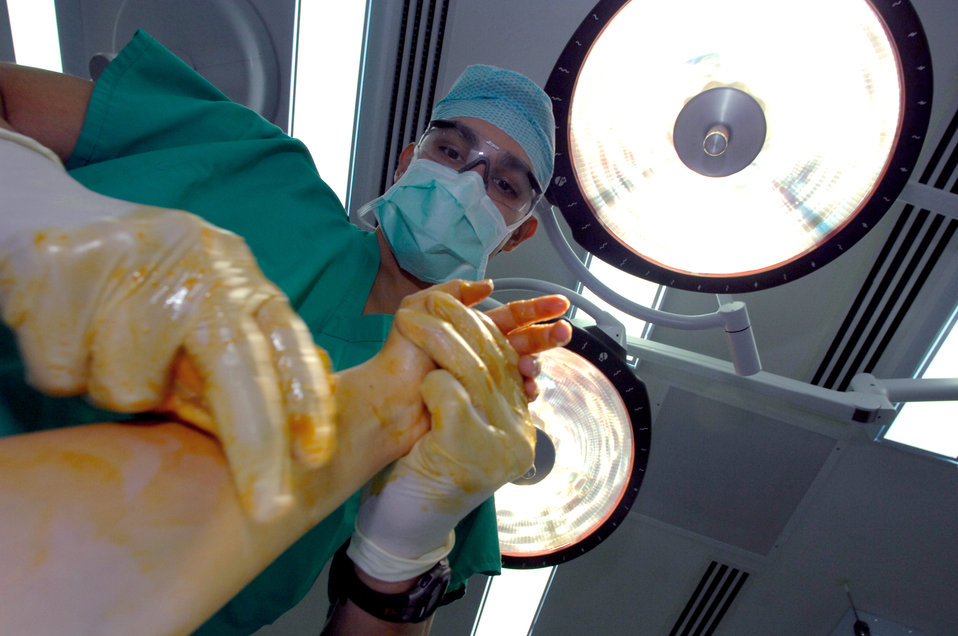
Patient perspective

Airman 1st Class Emanuel White scrubs down the arm of a